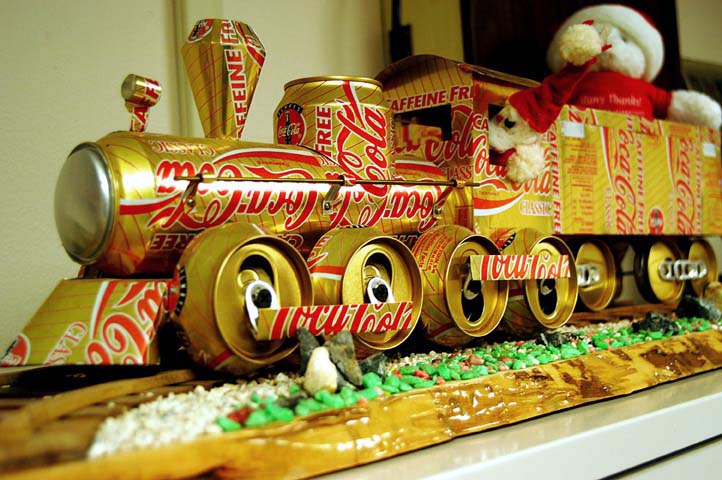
Making art out of recyclables

ANDREWS AIR FORCE BASE, Md. -- A train made of cans adorns the office of Helen Walker who makes a variety of sculptures using recycled materials. She is the 89th Civil Engineer Squadron's maintenance flight quality assurance evaluator.